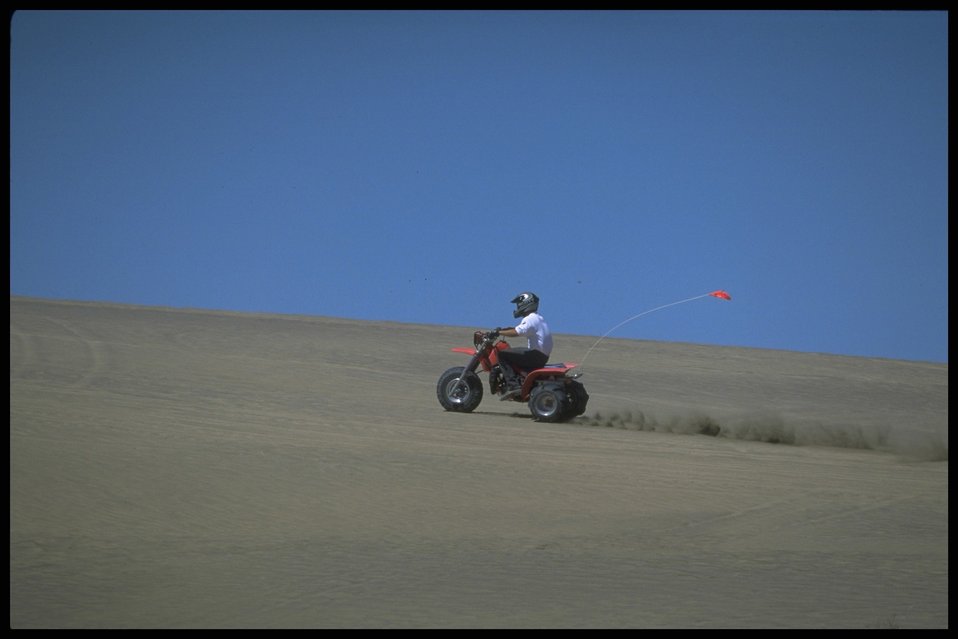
ATV at Sand Dunes, Christmas Valley, Lakeview District.